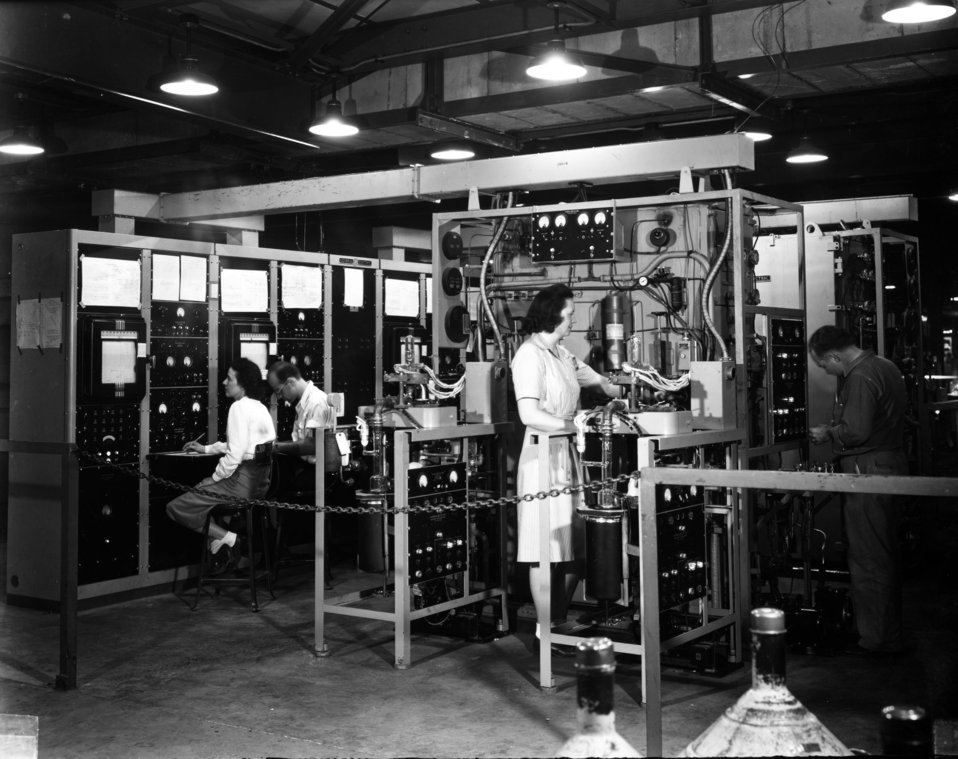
K-25 at Oak Ridge